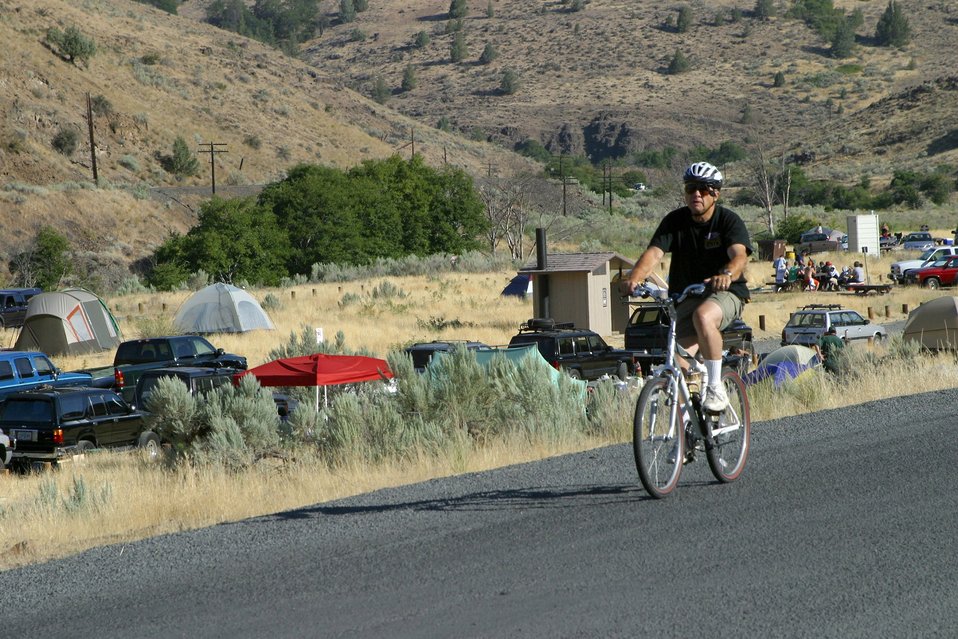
Campground at Harpham Flat boat ramp.